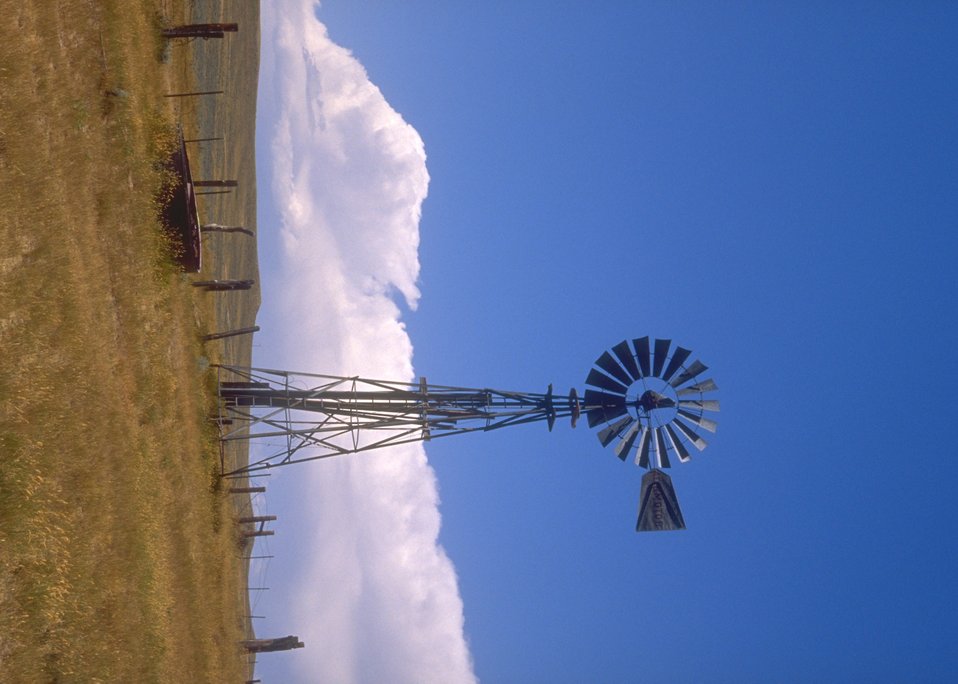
Windmill south of Gillette, WY